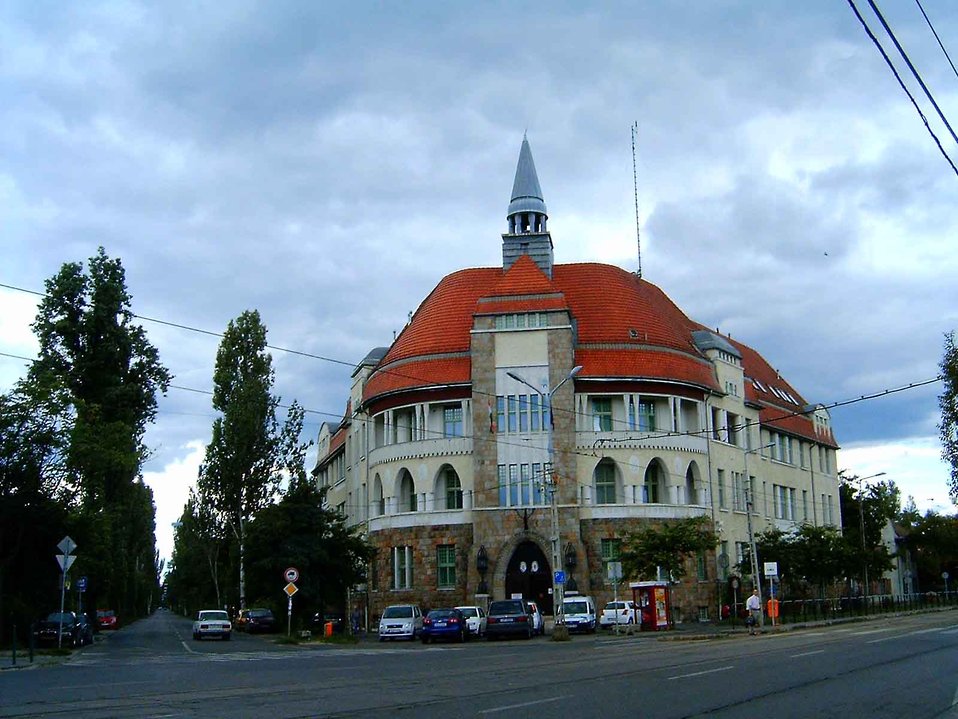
Magyar: Kispesti rendőrség épülete. Épült 1912-ben Schodits Lajos (1872–1941) és Éberling Béla (1881–1950?) tervei alapján Deutsch: Polizeigebäude in Kispest (19. Bezirk in Budapest) Police-office in Kispest (19th district in Budapest)